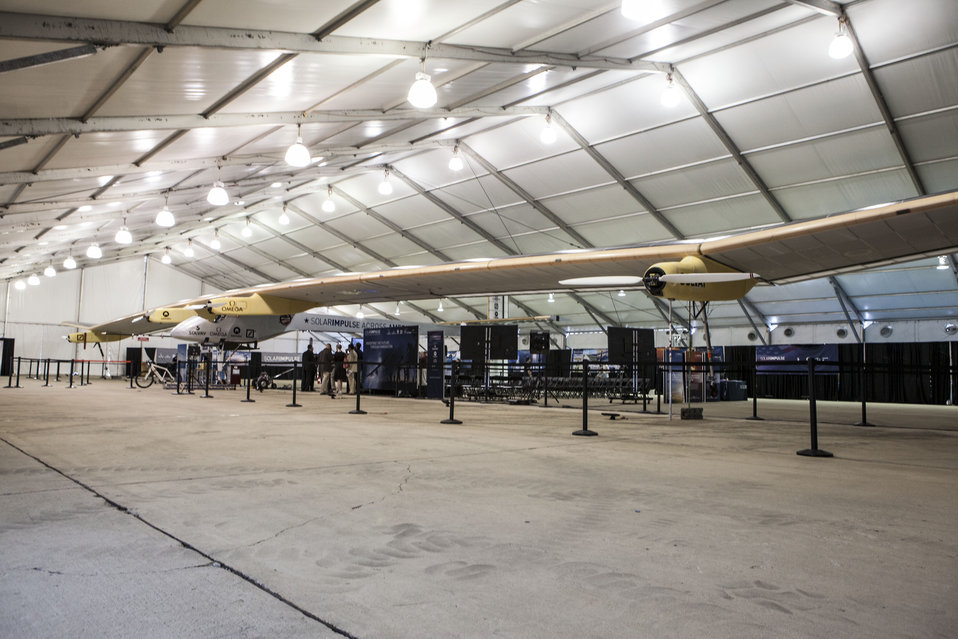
Solar Impulse plane lands in D.C.

Today, Solar Impulse unveiled its solar power plane to Washington, D.C. The plane landed at Dulles International Airport on Sunday, June 16, 2013.